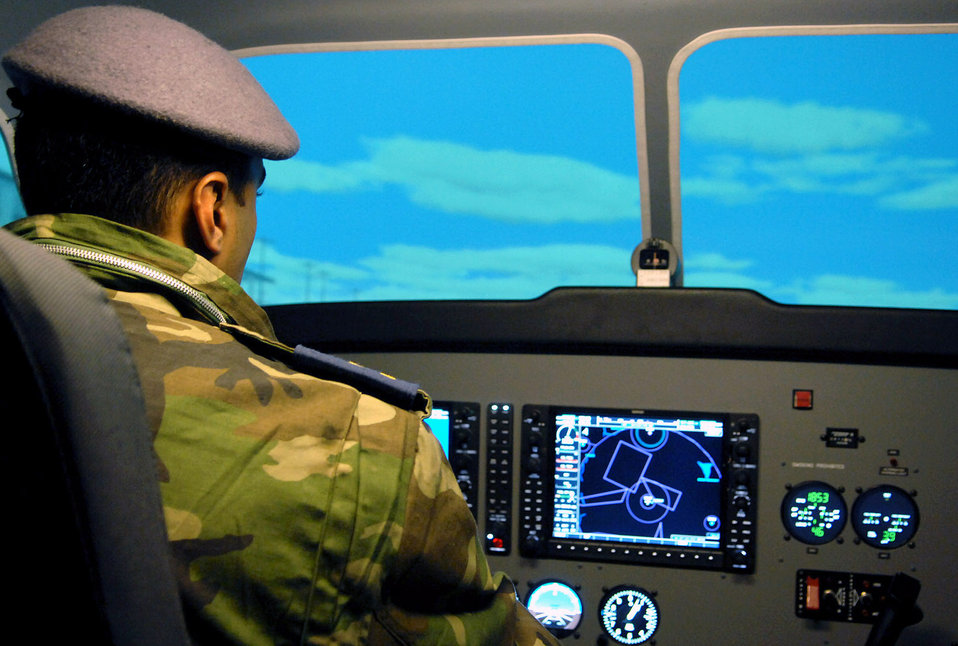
Young pilot shares vision for Iraqi Air Force

An Iraqi lieutenant takes controls of a Cessna simulator at the Iraqi Flying Training School here. Iraqi pilots have begun flying their own missions and have earned some initial successes. An all-Iraqi crew flying on a recent reconnaissance mission spotted several terrorists manufacturing improvised explosive devices. The crewmembers alerted Iraqi police who arrived on-scene soon after to impede the terrorist?s efforts.